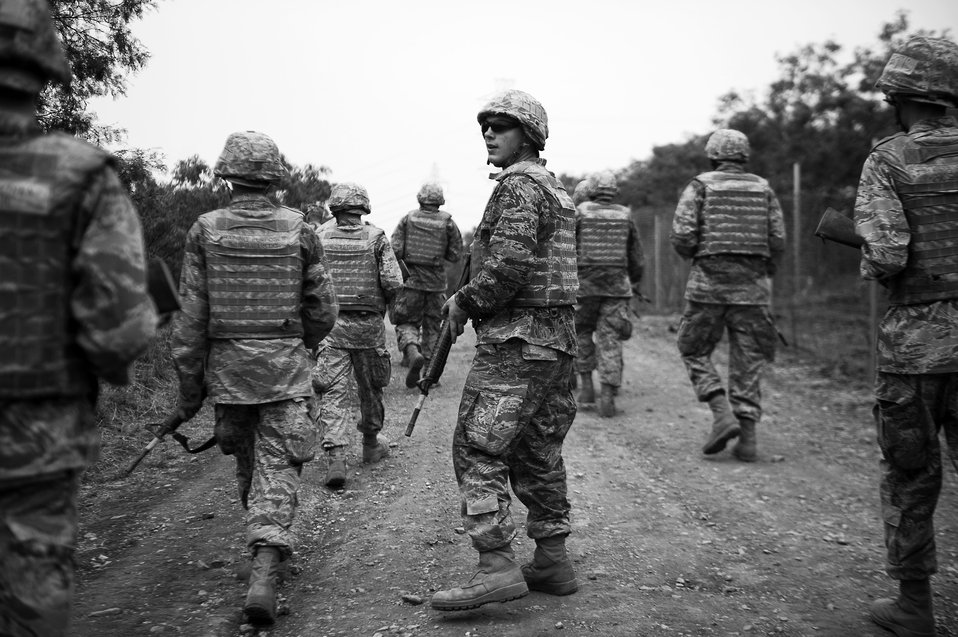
BEAST

Basic trainees go through their sixth week of Air Force basic military training at the Basic Expeditionary Airman Skills Training on May 25, 2011, at Lackland Air Force Base, Texas.